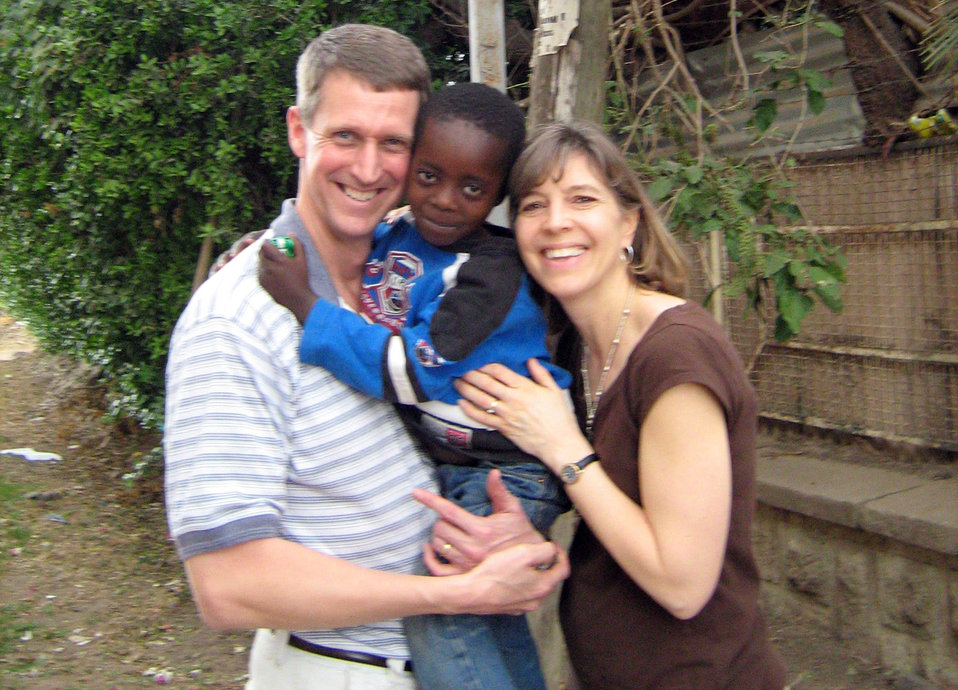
Osan family exercises option of adoption

Col. John Marselus and his wife, Kim, pose for a photo with their adopted 5-year-old son, Caleb, Feb. 1, 2010, at Osan Air Base, South Korea. The Marselus' adopted Caleb from Ethiopia in January 2010. Colonel Marselus is the 607th Air and Space Operations Center commander.